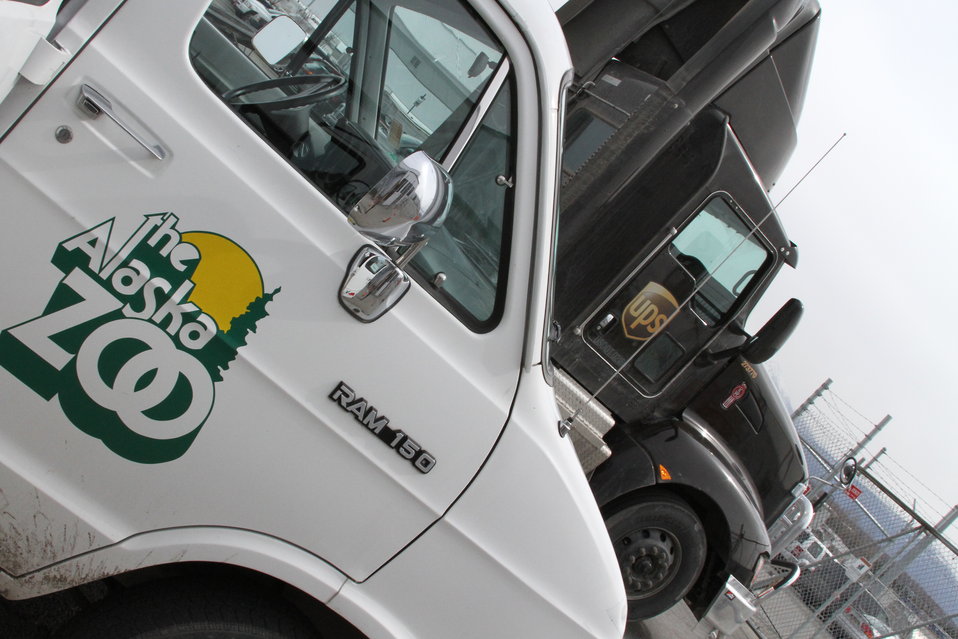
akzoo ups